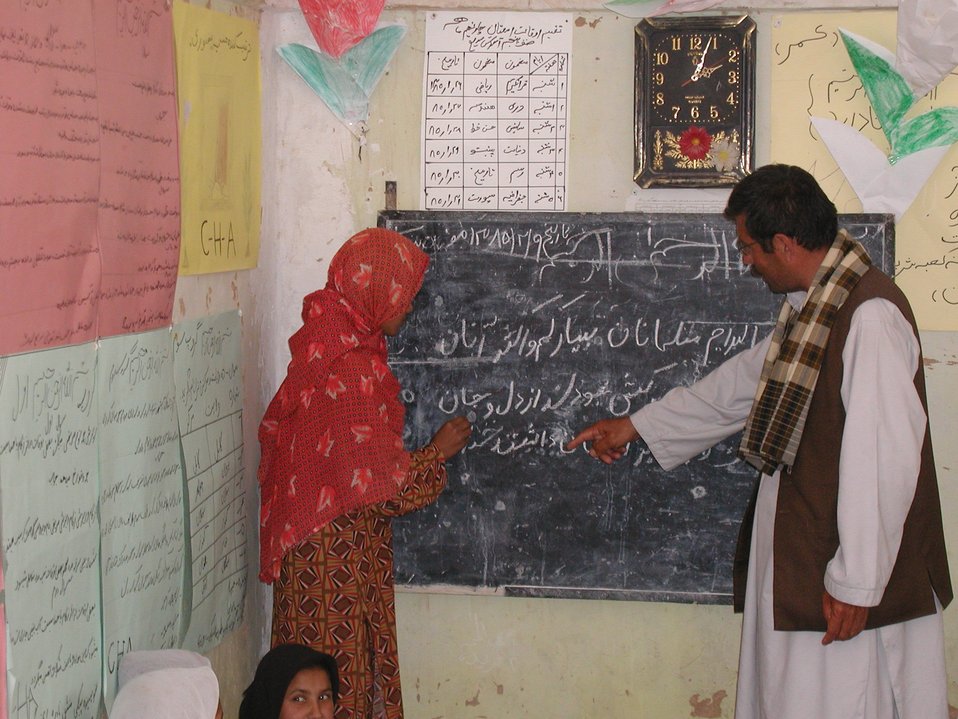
Literacy